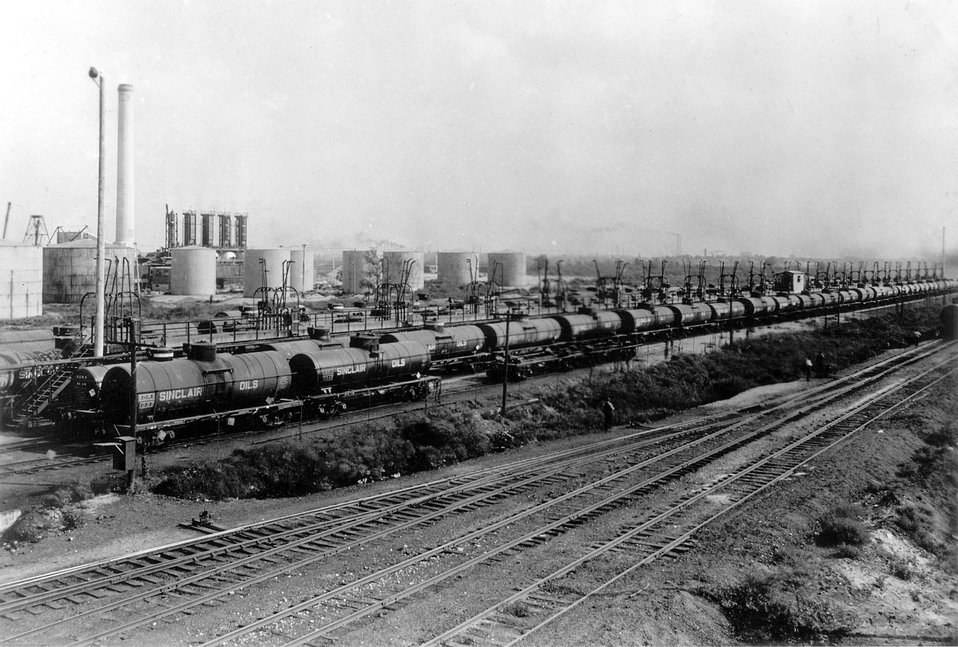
Loading oil tank cars for shipment 1918.